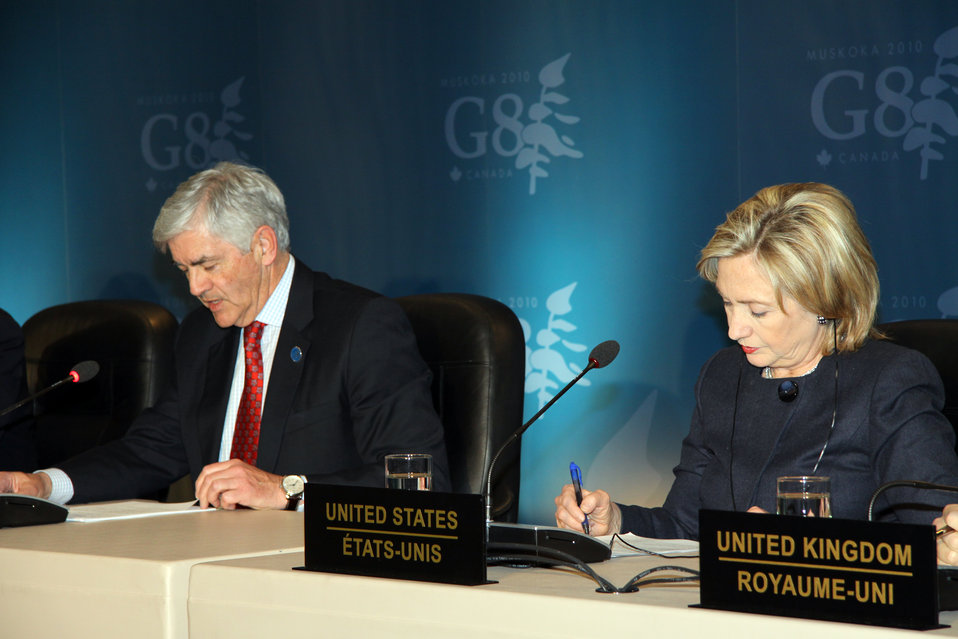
Secretary Clinton Participates in G8 Foreign Ministers Meeting Press Conference

U.S. Secretary of State Hillary Rodham Clinton and Canadian Minister of Foreign Affairs Lawrence Cannon participate in a press conference during the G8 Foreign Ministers Meeting in Ottawa, Canada March 29, 2010.